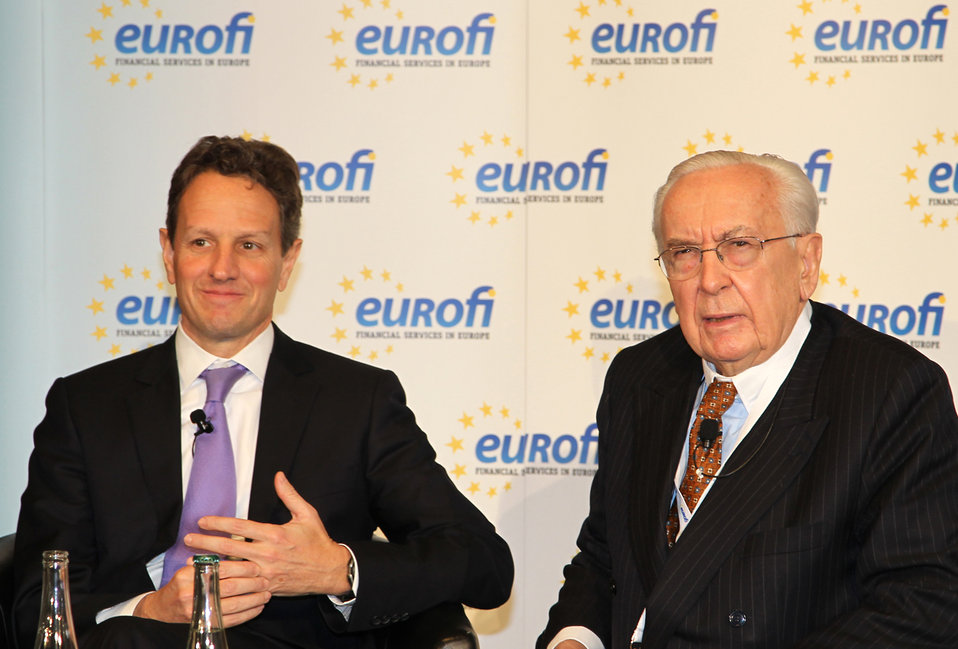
G-20 Meeting of Finance Ministers and Central Bank Governors in Paris, 02/18/2011

Secretary Geithner participated in a discussion on the state of the global recovery, the G-20’s upcoming agenda and international financial reform with Jacques de Larosière at “The Eurofi G-20 High Level Seminar 2011.”